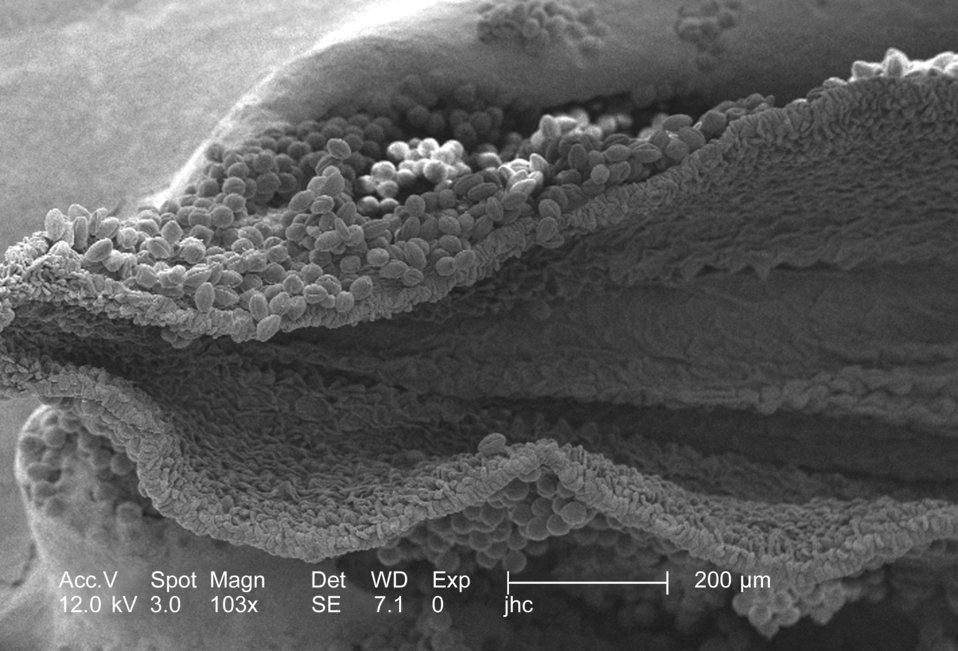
Under a low magnification of 103x, this scanning electron micrograph (SEM) revealed some of the morphologic ultrastructure found amongst a collection of pollen found within the dehisced, or split open, anther of a yellow "Fireworks" sundrops, Oenothera fruticosa flower. Note the pod-like configuration of the anther, within which reside many pollen grains ready for dissemination into the passing wind, or to become attached to a pollinator such as a bee. Judging by the shape of these pollen grains, it appears that the majority had yet to dry, for the elliptical, "football"-shaped grain, closer to the lip of the anther, represented those that had dried, and the round grains represented those that were still moist.